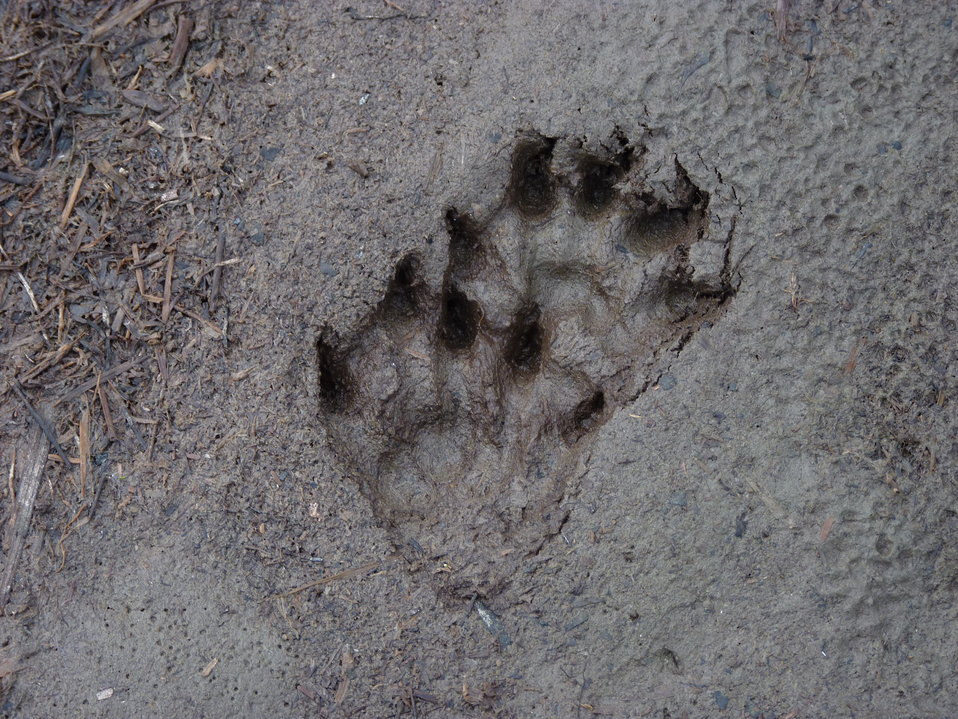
River otter tracks

Andreafsky Wilderness, Yukon Delta National Wildlife Refuge